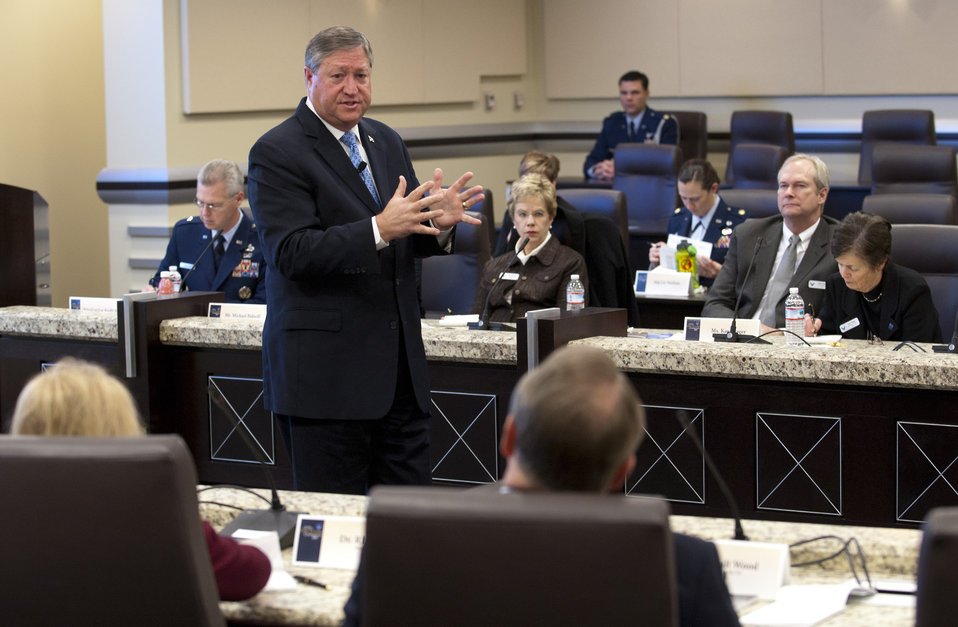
AF leaders meet with civic leaders

Secretary of the Air Force Michael Donley (standing upper left) speaks with civic leaders representing communities from across the U.S. during a conference Jan. 31, 2012, at Joint Base Andrews, Md. Hosted by Air Force Chief of Staff Gen. Norton Schwartz, the civic leaders attended briefings at the Pentagon and at JB Andrews. The group also will visit Joint Base Eustis-Langley in Norfolk, Va., for a look at Air Combat Command.